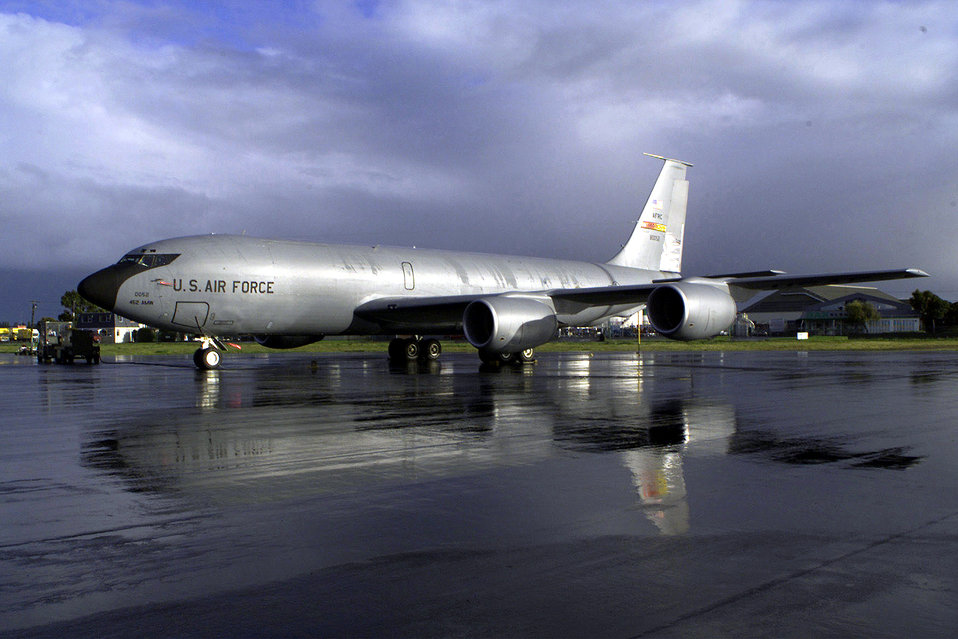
Headed far south

CHRISTCHURCH, New Zealand -- A KC-135R Stratotanker from the 452nd Air Mobility Wing at March Air Reserve Base, Calif., sits on the ramp here in support of Operation Deep Freeze. The operation is a joint military operation of the U.S. Armed Forces and the New Zealand Defence Forces. The operation provides logistic support for the U.S. National Science Foundation's Antarctic Program.